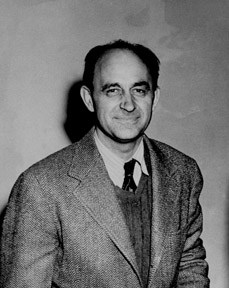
Enrico Fermi..